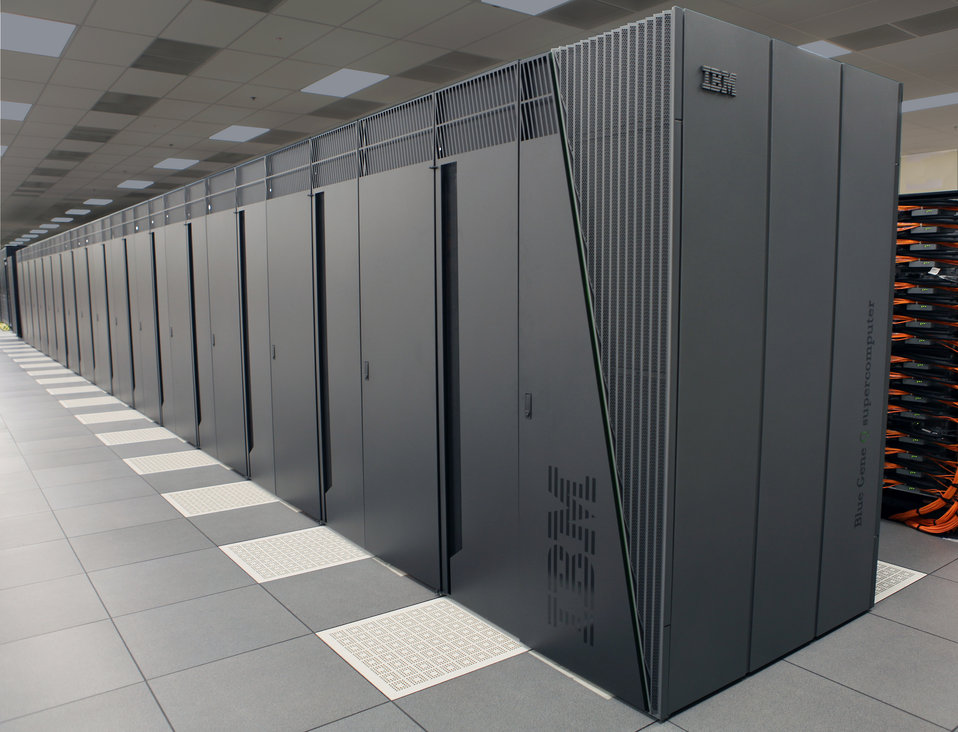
At Argonne National Laboratory, MIRA, the new petascale IBM Blue Gene/Q system being installed at the Argonne Leadership Computing Facility, will usher in a new era of scientific supercomputing.

An engineering marvel, the 10-petaflops machines is capable of carrying out 10 quadrillion calculations per second. The ALCF is committed to delivering 786 million core hours on MIRA in 2013. In full production mode, over 5 billion computer hours will be allotted to scientists each year.